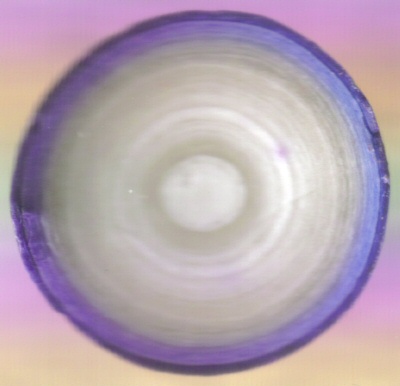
A flatbed scan of the flat side of a broken jawbreaker candy. Strata of sugar are visible.